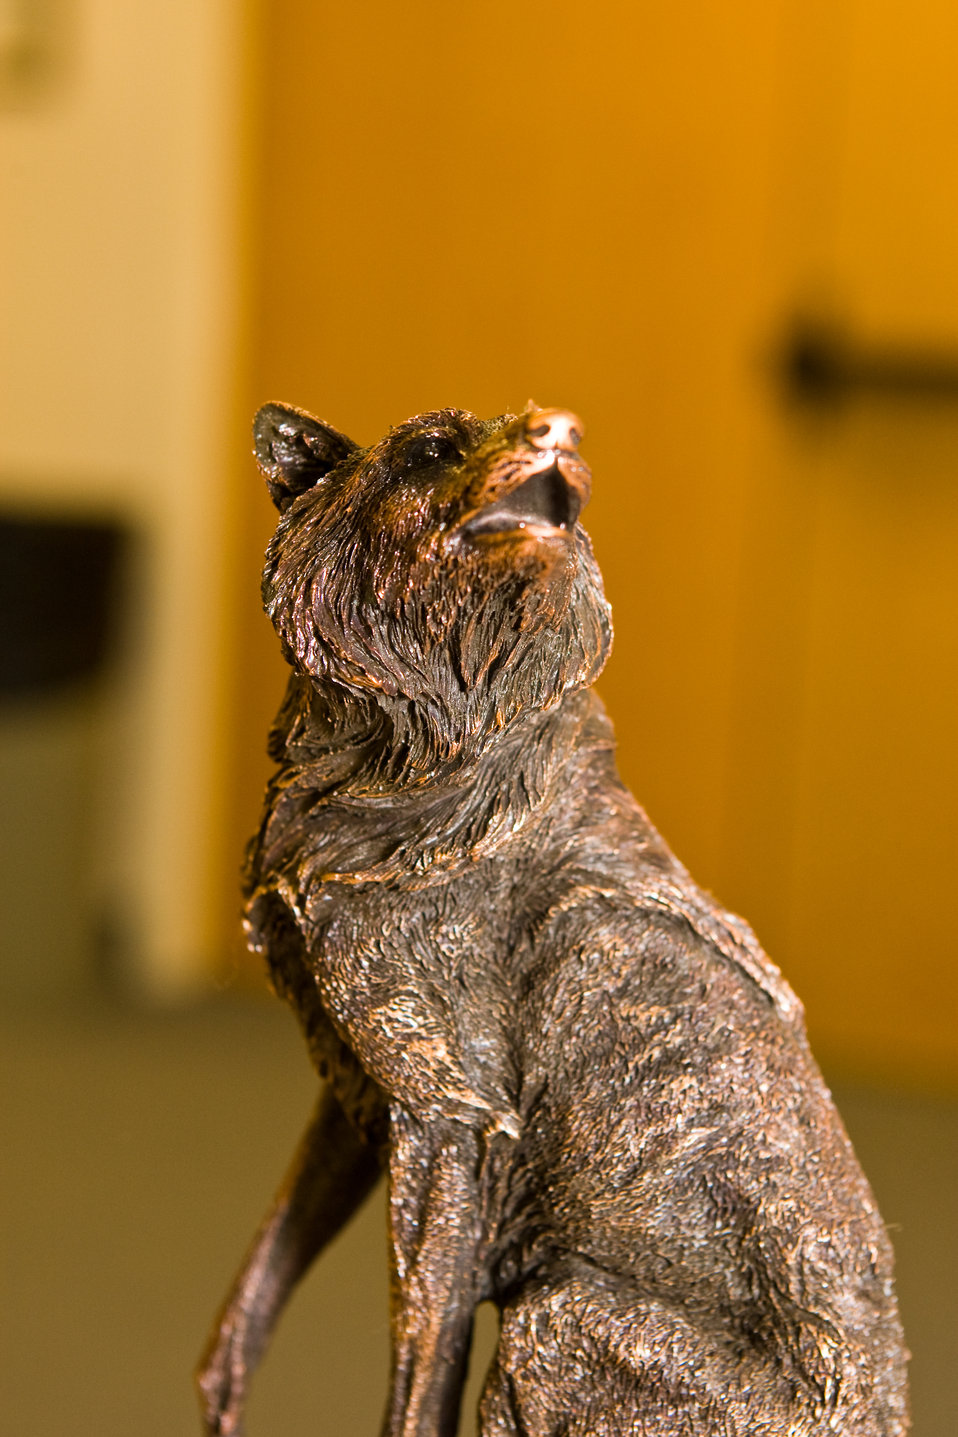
Howling Wolf Statue

On May 23rd, 2011 The U.S. Fish and Wildlife Service Mountain-Prairie Region honored three of the most influential individuals in wolf recovery in the Northern Rocky Mountains: Ed Bangs, Steve Fritts, and Margot Zallen. Ed Bangs started the event with an hour-long presentation, “Wolf Conservation: The Good, The Bad, and The Ugly.”

Following the presentation, Regional and National leadership recognized the imminent retirement of Ed, Steve, and Margot with a variety awards for their contributions.